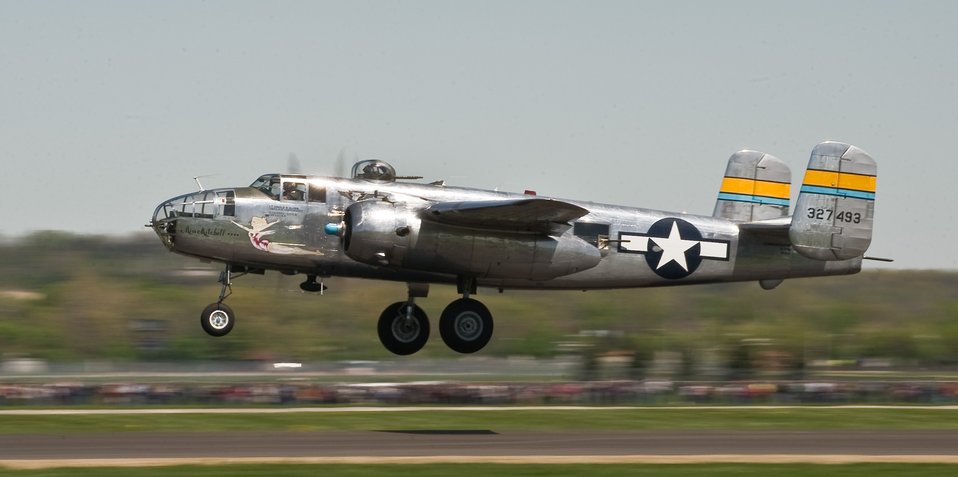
68th Reunion of Doolittle Raiders

B-25J